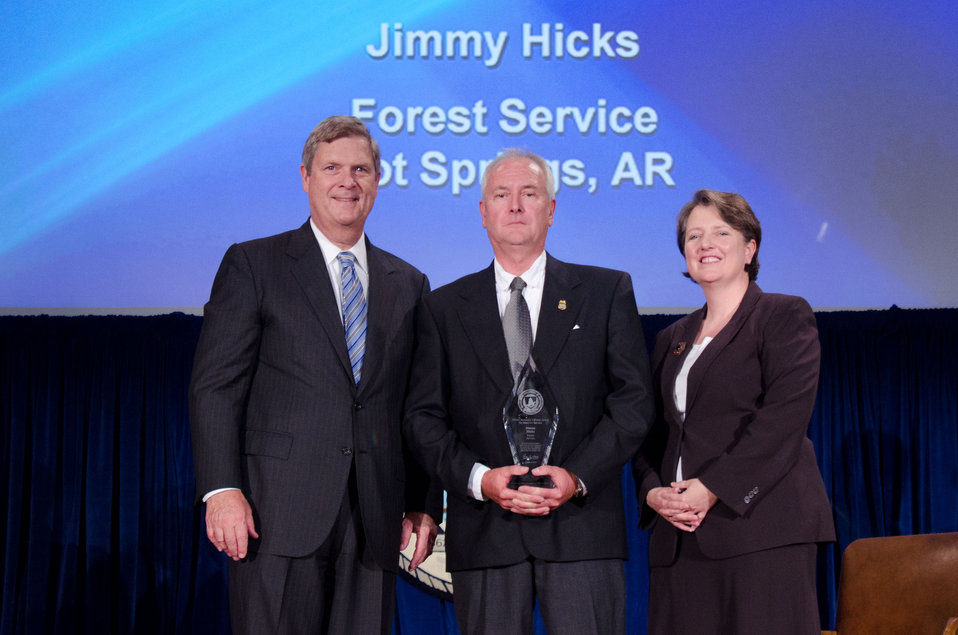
Agriculture Secretary Tom Vilsack (l) and Deputy Secretary Kathleen Merrigan (r), presents the Award for heroism and Emergency response to Jim Hicks, Forest Service, Hot Springs, AR. For you exceptional, professional, and compassionate response in rescuing and moving people to safe ground and out of immediate harm during the June 11, 2010 flash flood at Albert Pike Recreation Area. On Wednesday, September 14, 2011 in the Jefferson Auditorium at the US Department of Agriculture in Washington, DC.